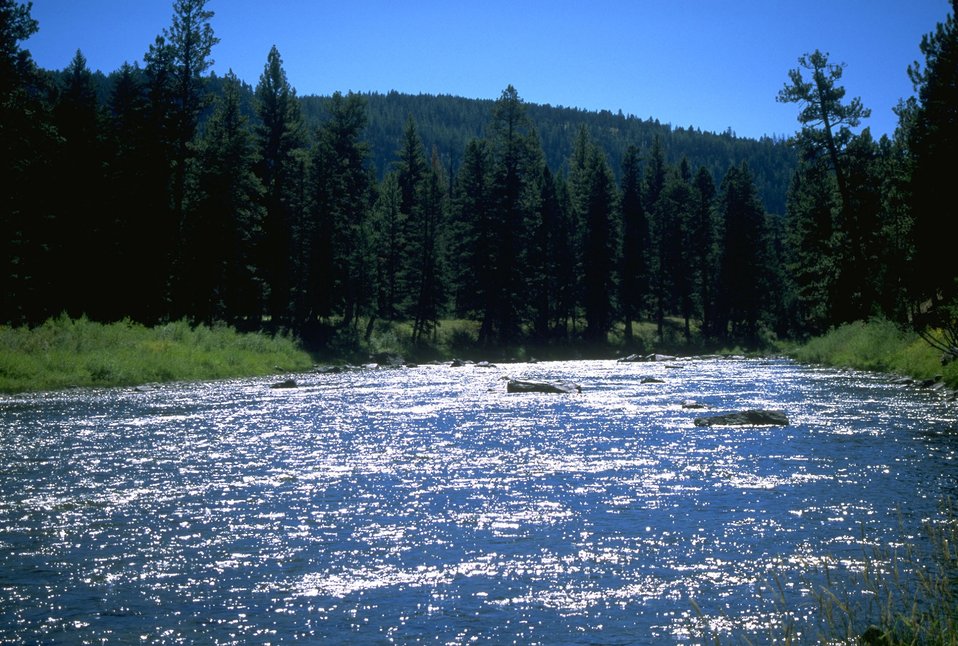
Scenic shot of Blackfoot River